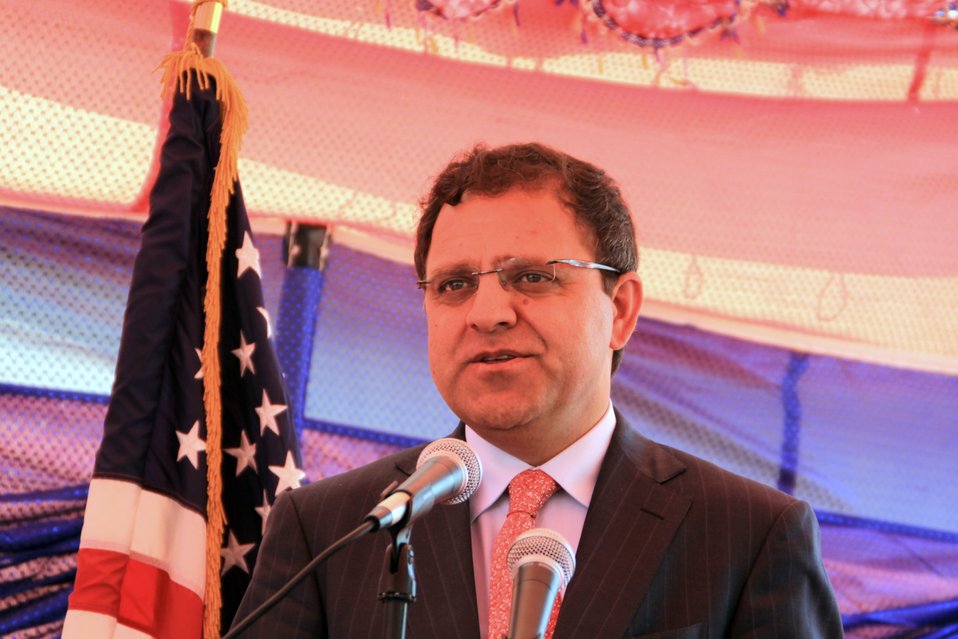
Badam Bagh Farm